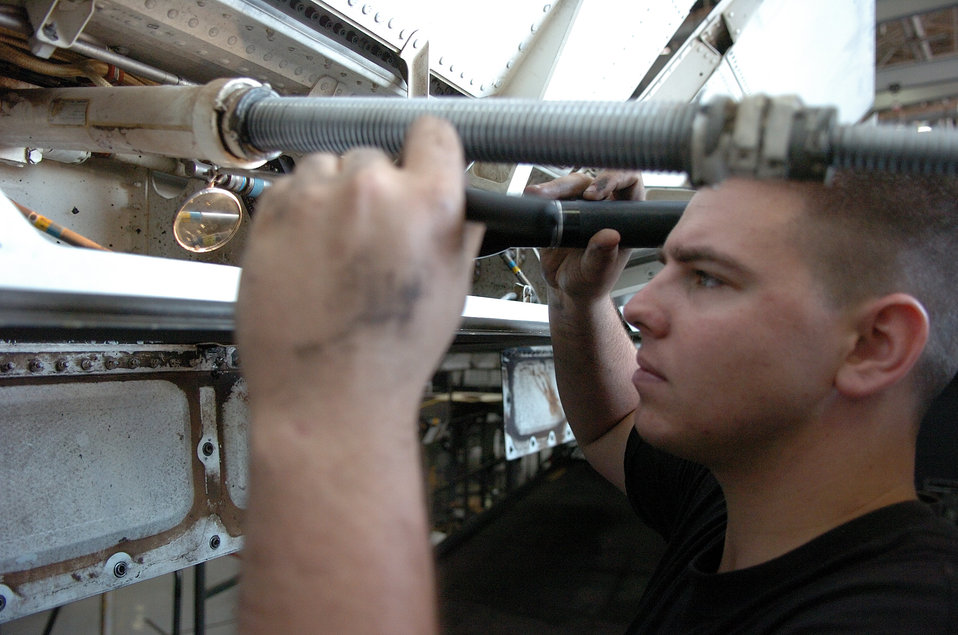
'Bone' makes evolving mark on war on terrorism

Airman 1st Class Aaron Gill checks for foreign objects while performing a preventative maintenance inspection Sept. 13 on a B-1 Lancer at Dyess Air Force Base, Texas. An inspection on the bomber is required after every 600 hours of flying time. Airman Gill is a member of the 9th Bomb Squadron.